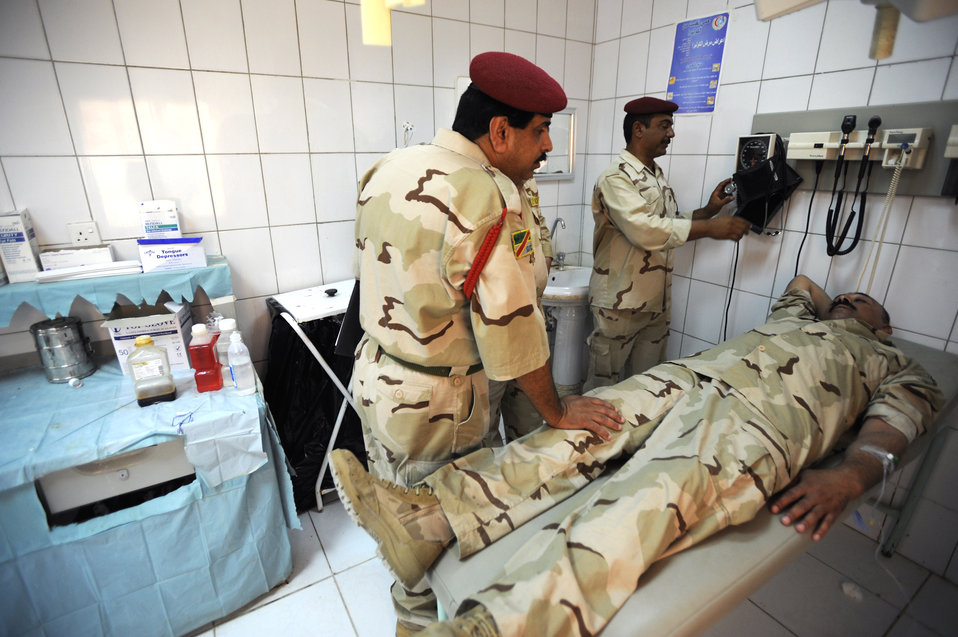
Medical advisers guide Iraqi army back into patients' trust

An Iraqi medical technician exams a fellow soldier in the clinic Aug. 17, 2009, at Camp Ur, Iraq. The Iraqi camp boasts a fully functioning medical clinic complete with a three-bay emergency room, pharmacy, dentist, radiology department and public health, as well as a highly trained team of doctors, nurses and technicians on staff.